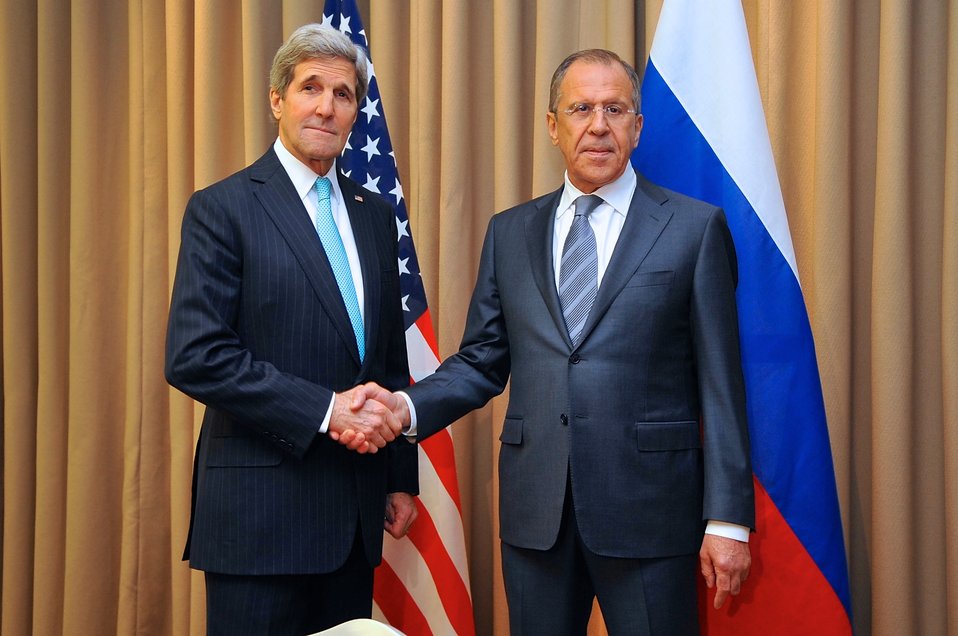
Secretary Kerry Shakes Hands With Russian Foreign Minister Lavrov Before Meeting on Ukraine in Geneva

U.S. Secretary of State John Kerry shakes hands with Russian Foreign Minister Sergey Lavrov before the two joined with Ukrainian and European Union officials for four-way talks about Ukraine in Geneva, Switzerland, on April 17, 2014.